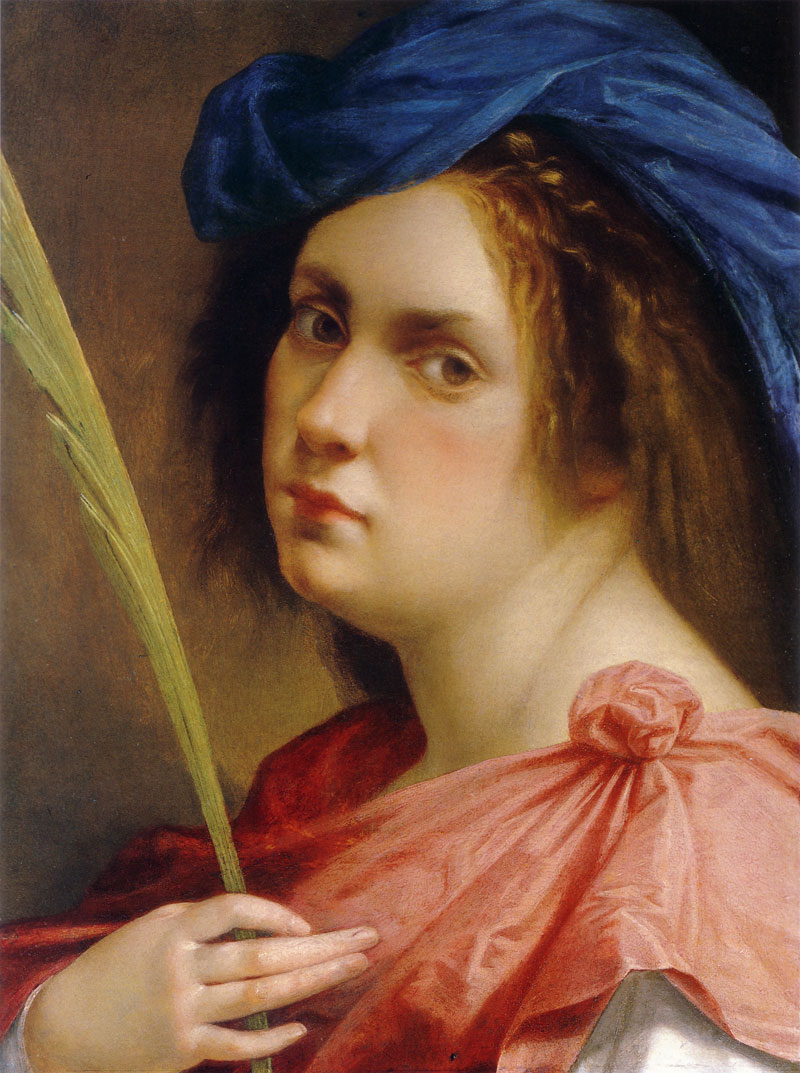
Artemisia Gentileschi Selfportrait Martyr